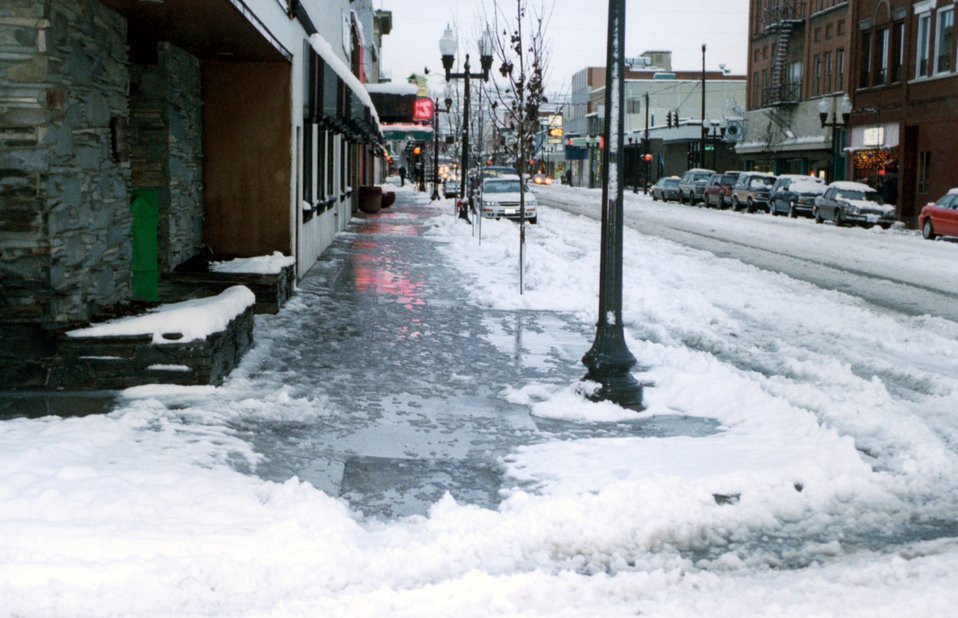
IN KLAMATH FALLS, OREGON, A DISTRICT HEATING SYSTEM MELTS SNOW ON SIDEWALKS AND CROSSWALK.

A GEOTHERMAL DISTRICT HEATING SYSTEM KEEPS THE SIDEWALKS CLEAR AND DRY AFTER A SNOWFALL. THE DISTRICT HEATING SYSTEM MELTS SNOW ON MORE THAN 50,000 SQUARE FEET OF SIDEWALKS AND CROSSWALKS. SNOWMELT TUBING IN SLURRY WAS INSTALLED UNDER THE SIDEWALKS IN 1995 AS PART OF THE CITY'S DISTRICT HEATING SYSTEM, WHICH WAS CONSTRUCTED IN 1981 TO HEAT 14 GOVERNMENT BUILDINGS. THE SYSTEM HAS NOW EXPANDED TO INCLUDE NON-GOVERNMENT BUILDINGS.